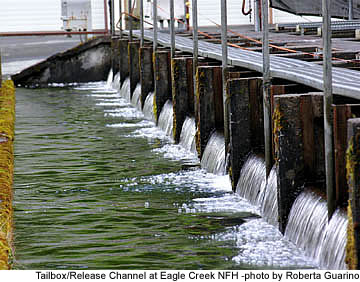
Release Channels at Eagle Creek National Fish Hatchery

A side view of release channels at Eagle Creek National Fish Hatchery.